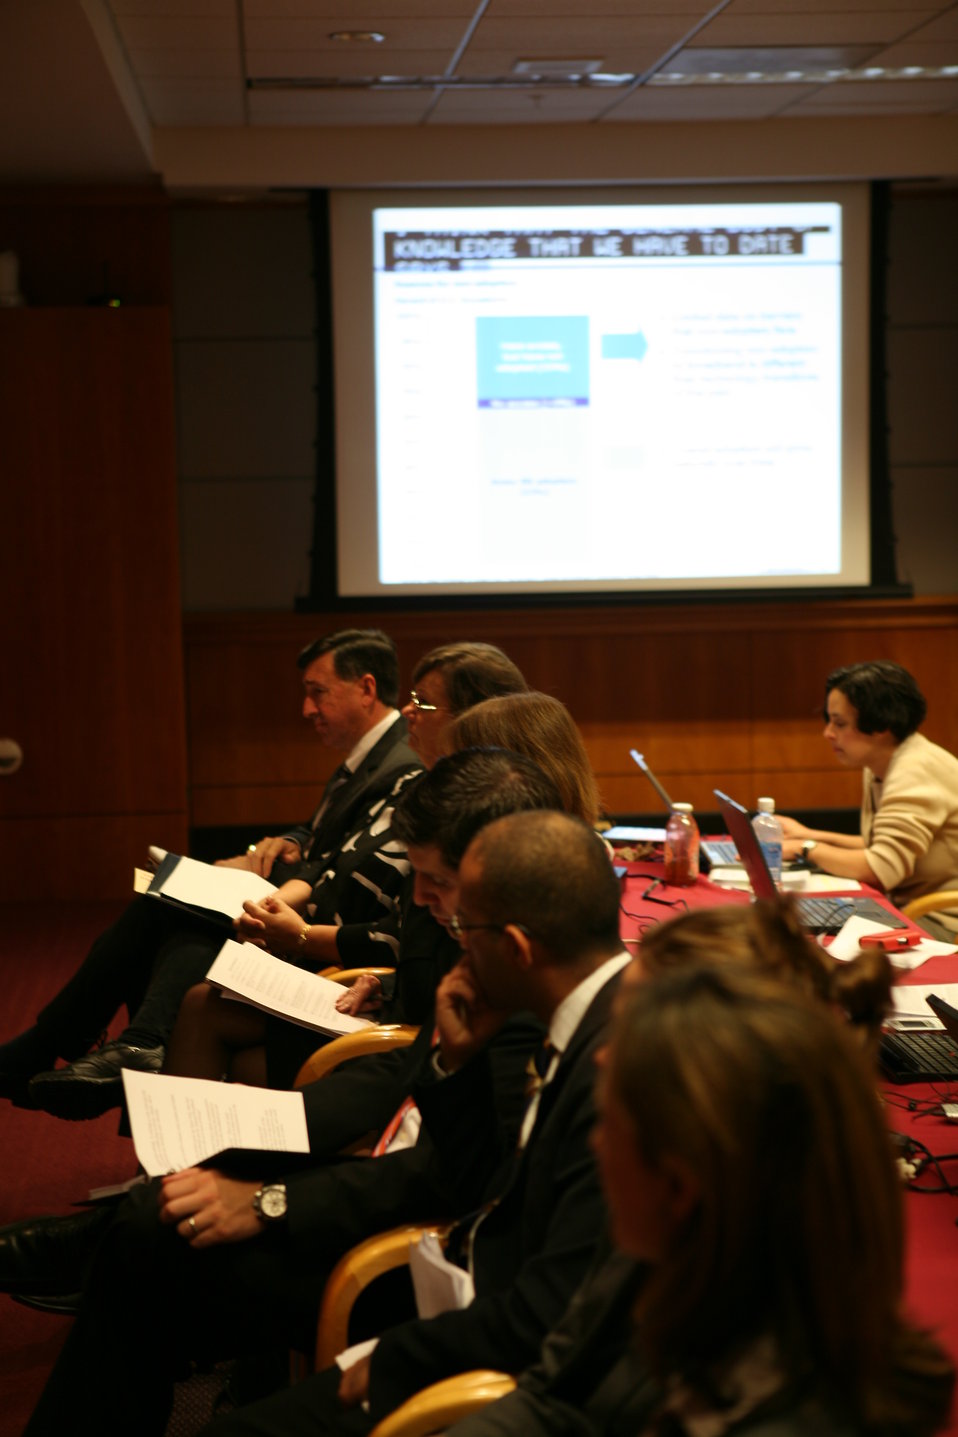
Midterm Review16

Broadband Midterm Review, 9-29-09